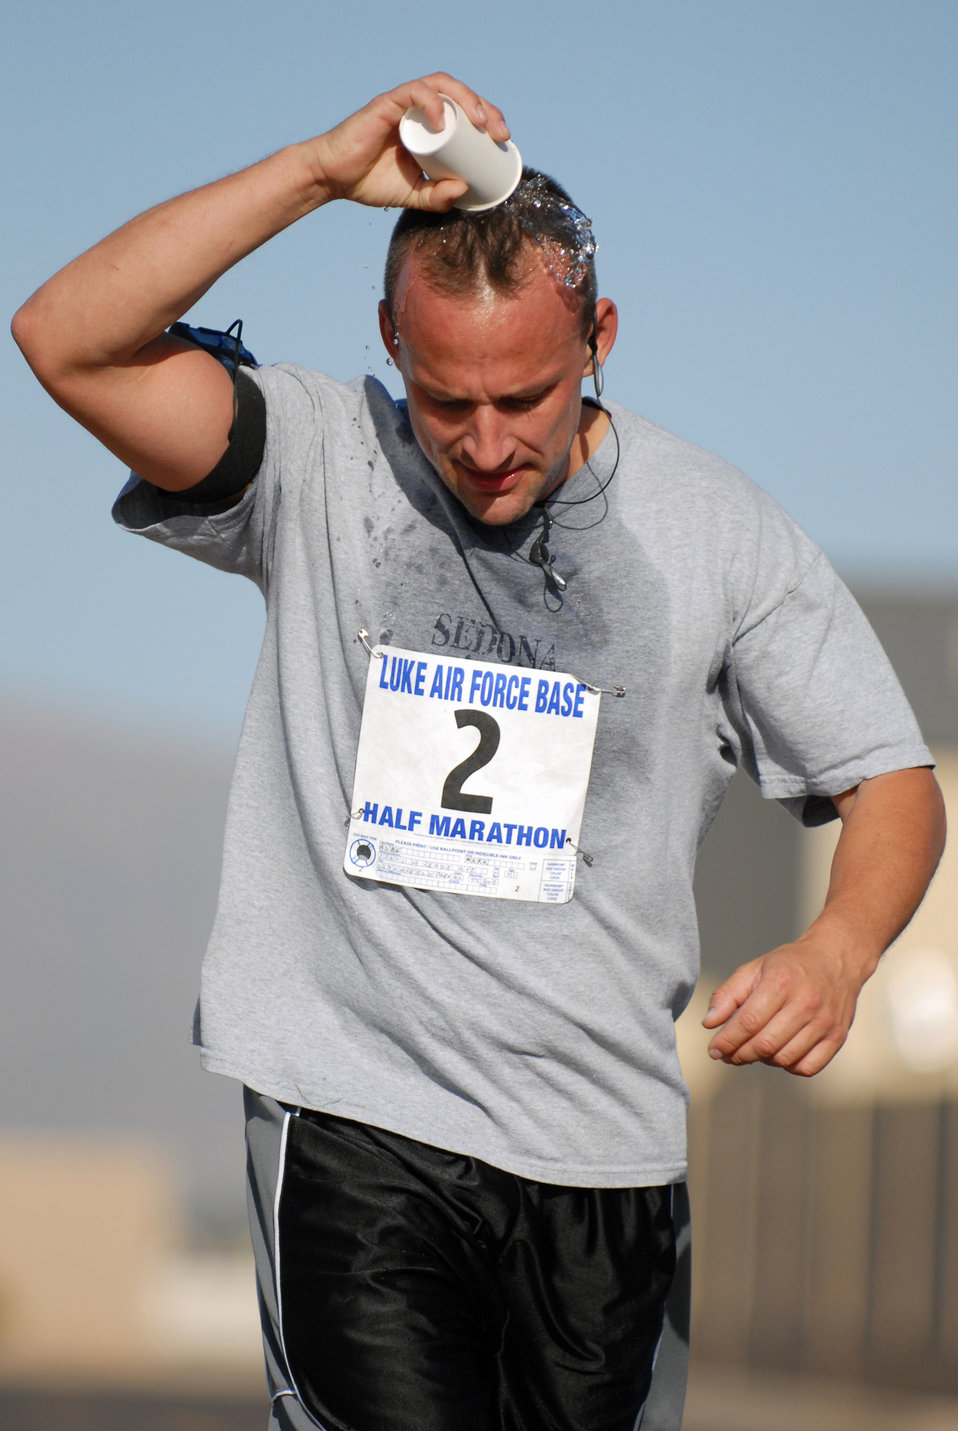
Fitness 'In Training' program helps runners achieve goals

Tech. Sgt. Mark Aube cools off with a cup of water during the half marathon May 3 at Luke Air Force Base, Ariz. Fifty-four runners logged more than 700 miles during the run. Sergeant Aube is an electrical environmental technician with the 309th Aircraft Maintenance Unit.